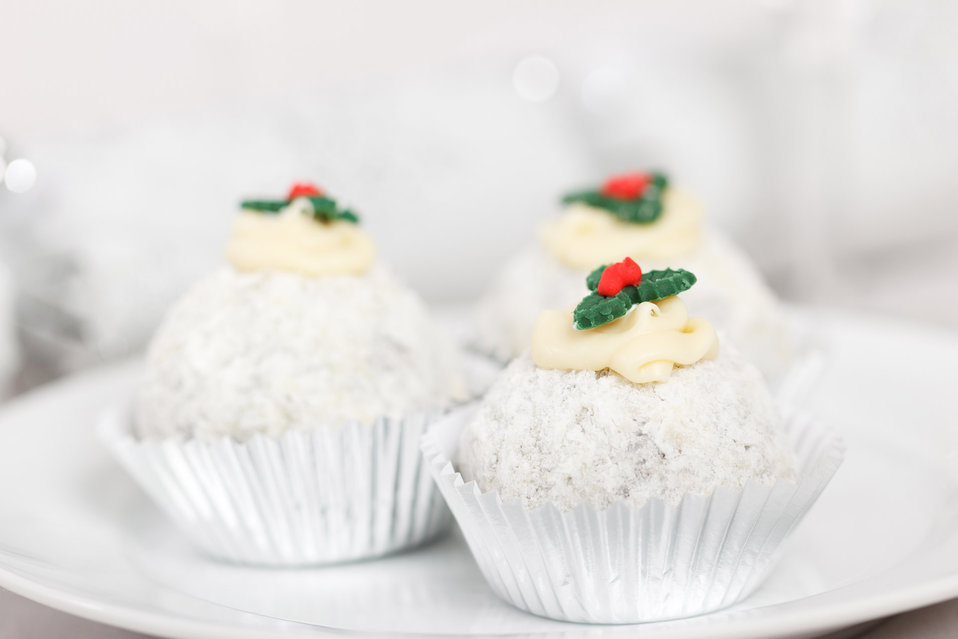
Christmas desserts with holly

Round christmas dessert with coconut and a holly on the top.